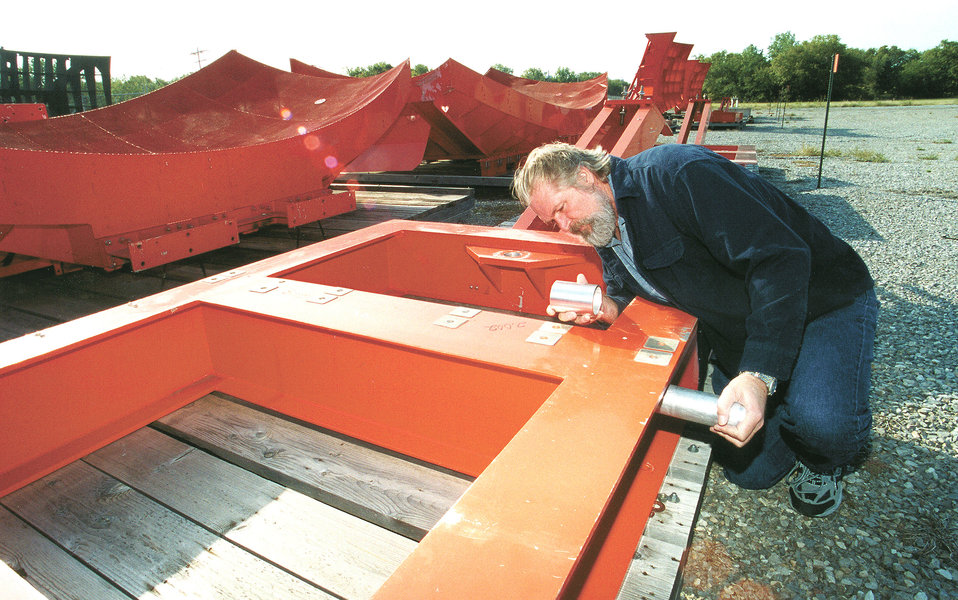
IDEA saves Air Force millions

TINKER AIR FORCE BASE, Okla. -- Vern Shurrum demonstrates his idea to have depot-level maintenance on air traffic control radar antennas performed on-site by installing a self-lubricating bushing. The idea will save the Air Force $5.7 million and earned him $10,000 through the Innovative Development through Employee Awareness program. Shurrum is a logistics management specialist in the product support directorate here.